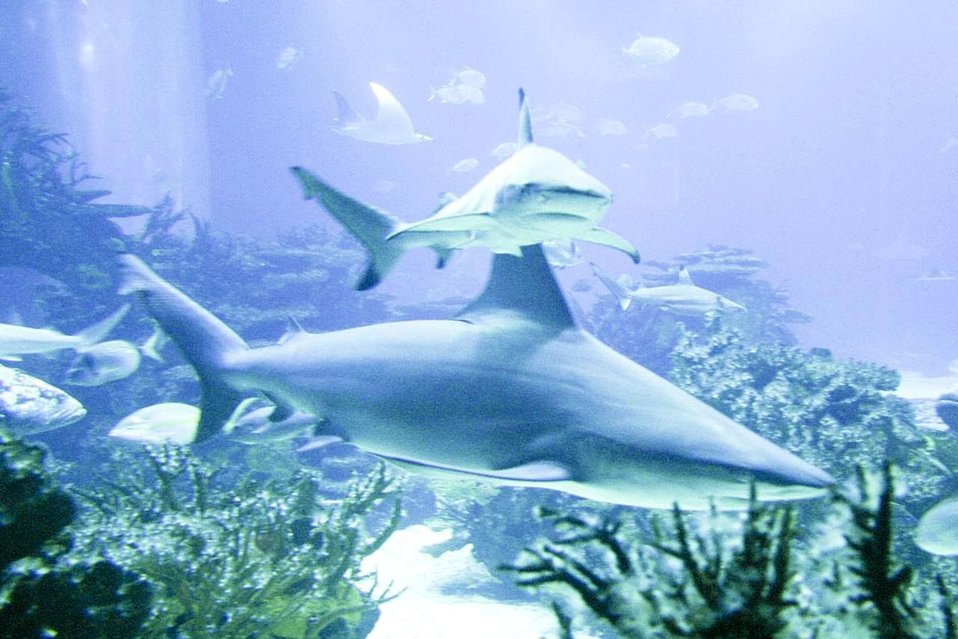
English:
Image title: Ocean shark fish Image from Public domain images website, http://www.public-domain-image.com/full-image/fauna-animals-public-domain-images-pictures/fishes-public-domain-images-pictures/ocean-shark-fish.jpg.html